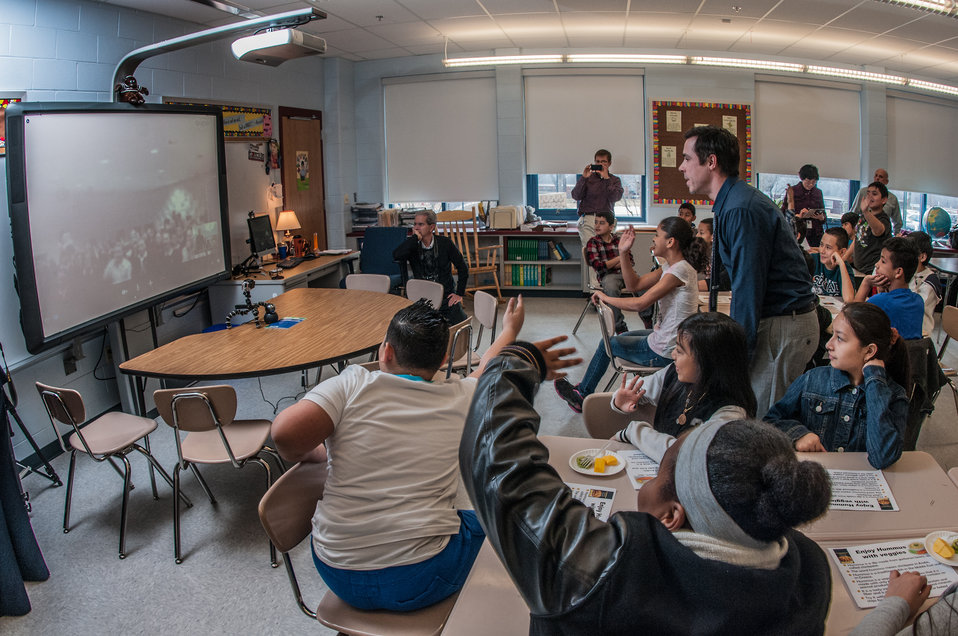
Harmony Hills Elementary School 5th graders wave hello to Dalry Primary School students in North Ayershire, Scotland, United Kingdom, at the beginning of a live overseas video conversation, during the inaugural International School Meals Day at Harmony Hills Elementary School in Silver Spring, MD, on Friday, March 8, 2013. Mr. Damien Grasso's 5th grade class was paired with Mrs. Karen McAllister’s class in Scotland. USDA's Food and Nutrition Service oversees the administration of 15 nutrition assistance programs that work in concert to form a national safety net against hunger. Learn more by visiting www.fns.usda.gov and twitter @USDANutrition.